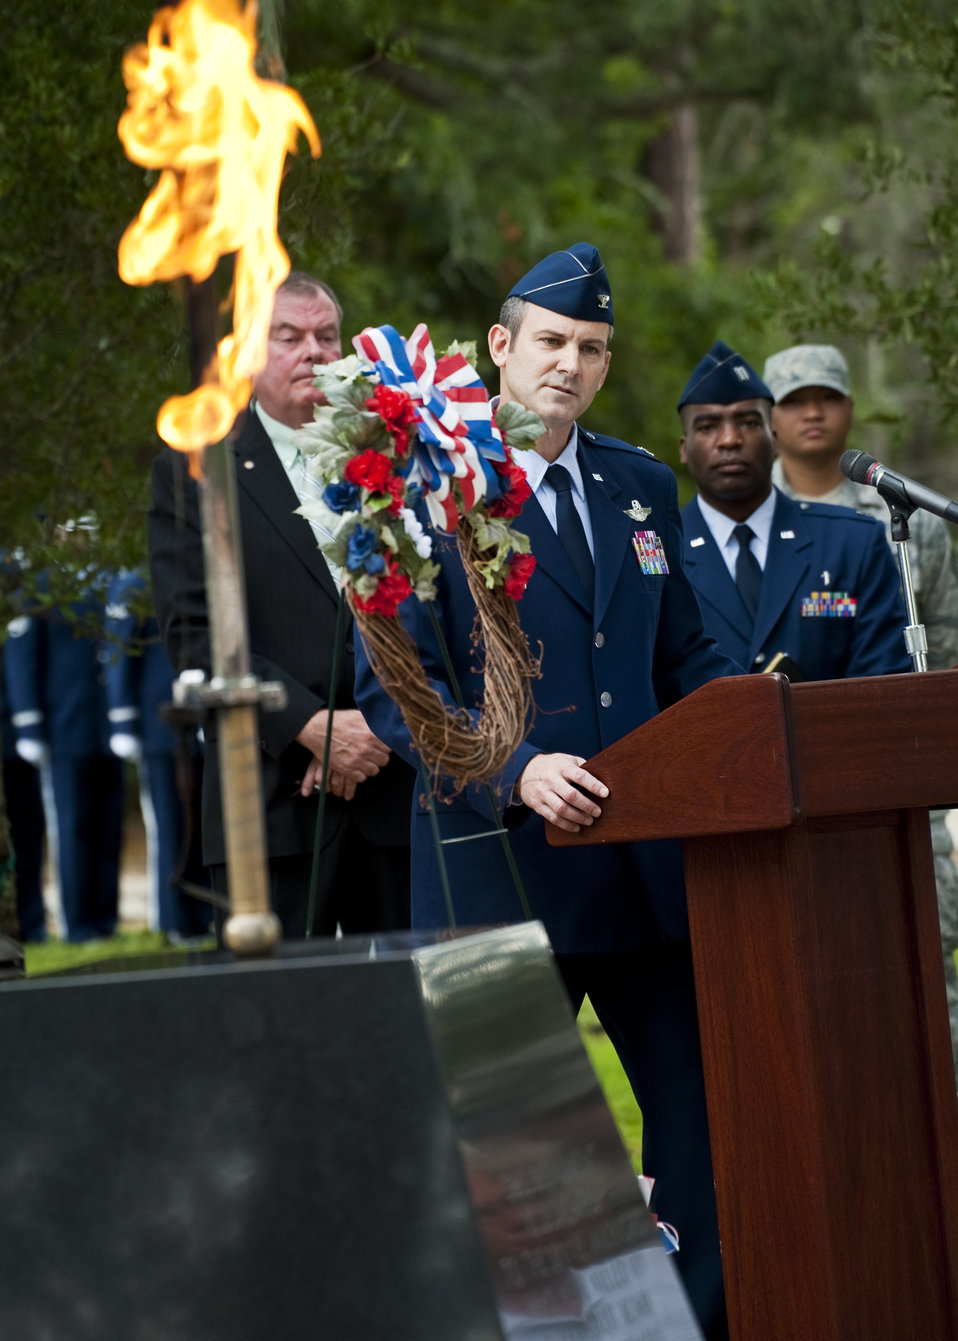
Khobar Towers memorial

Col. Andrew Toth, the 33rd Fighter Wing commander, addresses the families of the victims of the Khobar Towers bombing during a memorial ceremony June 24, 2011, at Eglin Air Force Base, Fla. June 25 marks the 15th anniversary of the bombing.